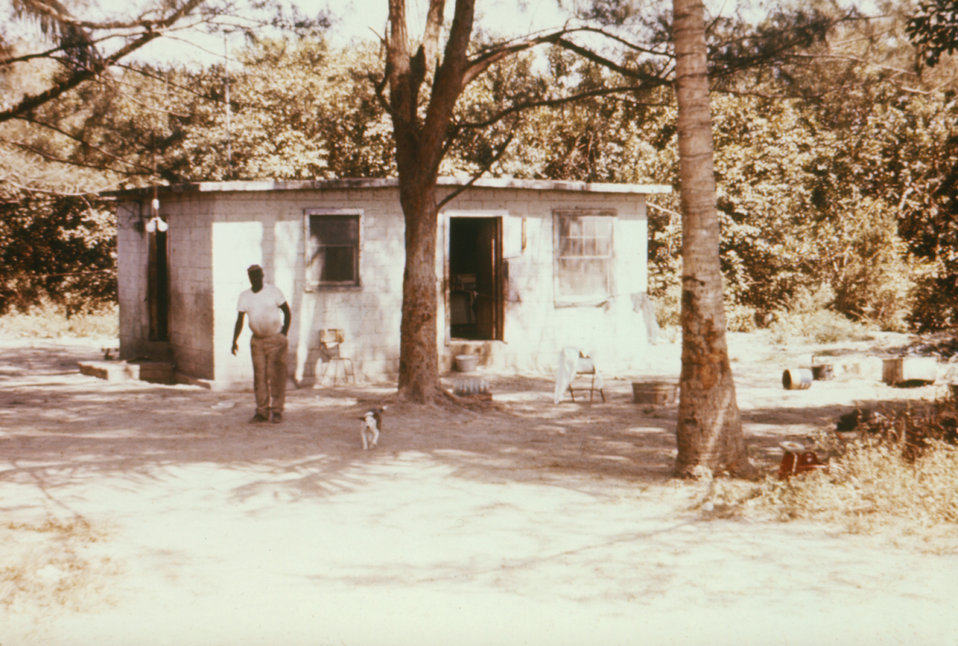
This was part of a series used to familiarize public health inspectors with sanitation conditions in migrant worker camps.